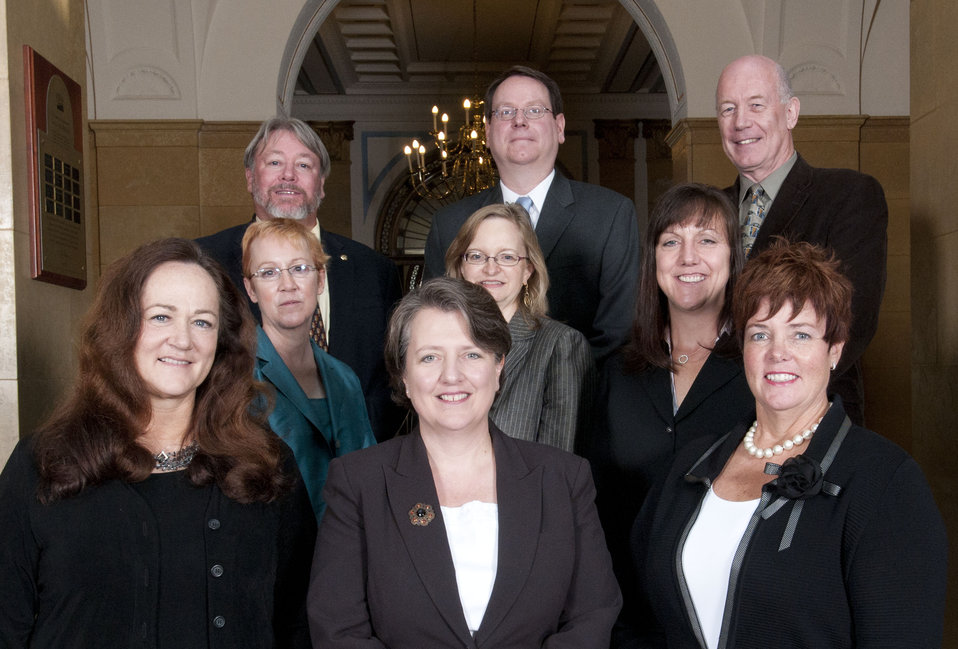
Emerging Chemical Threat to Food Issue Team, Food Safety and Inspection Service, Washington, DC. & Athens, GA. Kim Rene Green and Lynda Collins Kelley, Group Leaders. For leading USDA in the recognition of an emerging threat from novel chemical agents to the US food supply and for developing and implementing research and policies to address the threat. .
On September 14, 2011 in the patio of the Whitten Building Patio of the US Department of Agriculture in Washington, DC.